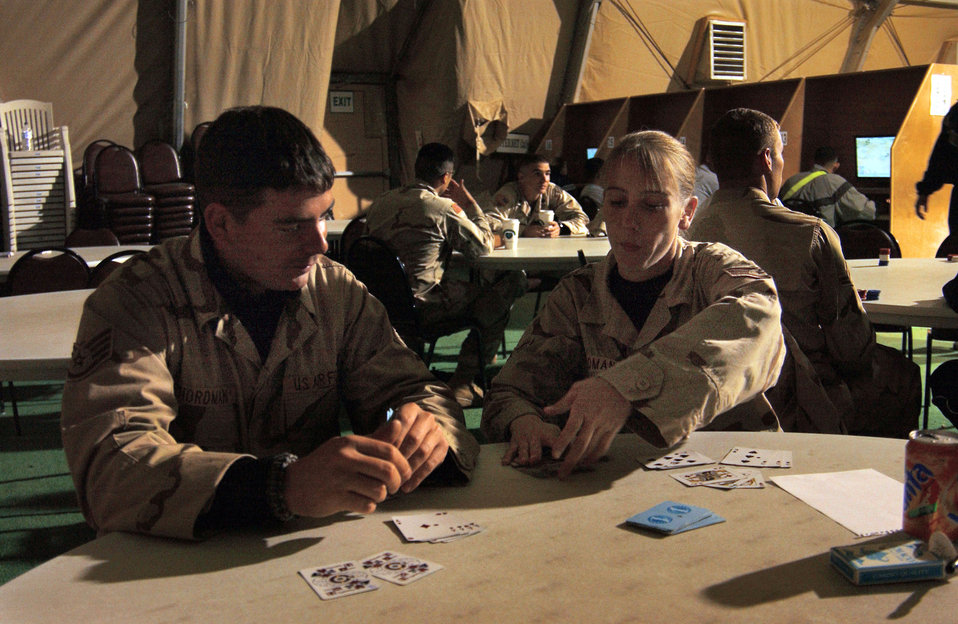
Married and deployed

BALAD AIR BASE, Iraq (AFPN) -- Staff Sgts. Craig and Millie Nordman enjoy a game of cards during their off-duty time at the recreation tent. The two sergeants have been married for four and a half years and are deployed here with 332nd Expeditionary Civil Engineering Squadron for Air and Space Expeditionary Force 7/8.